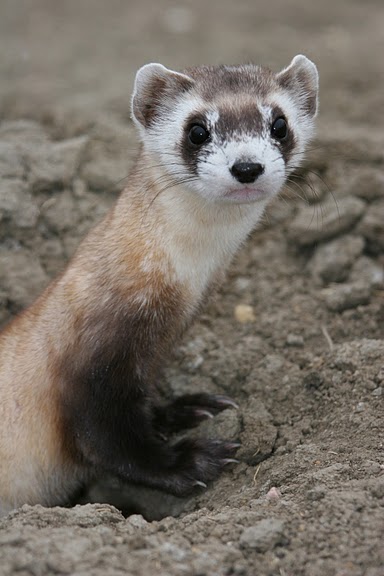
Black-footed Ferret